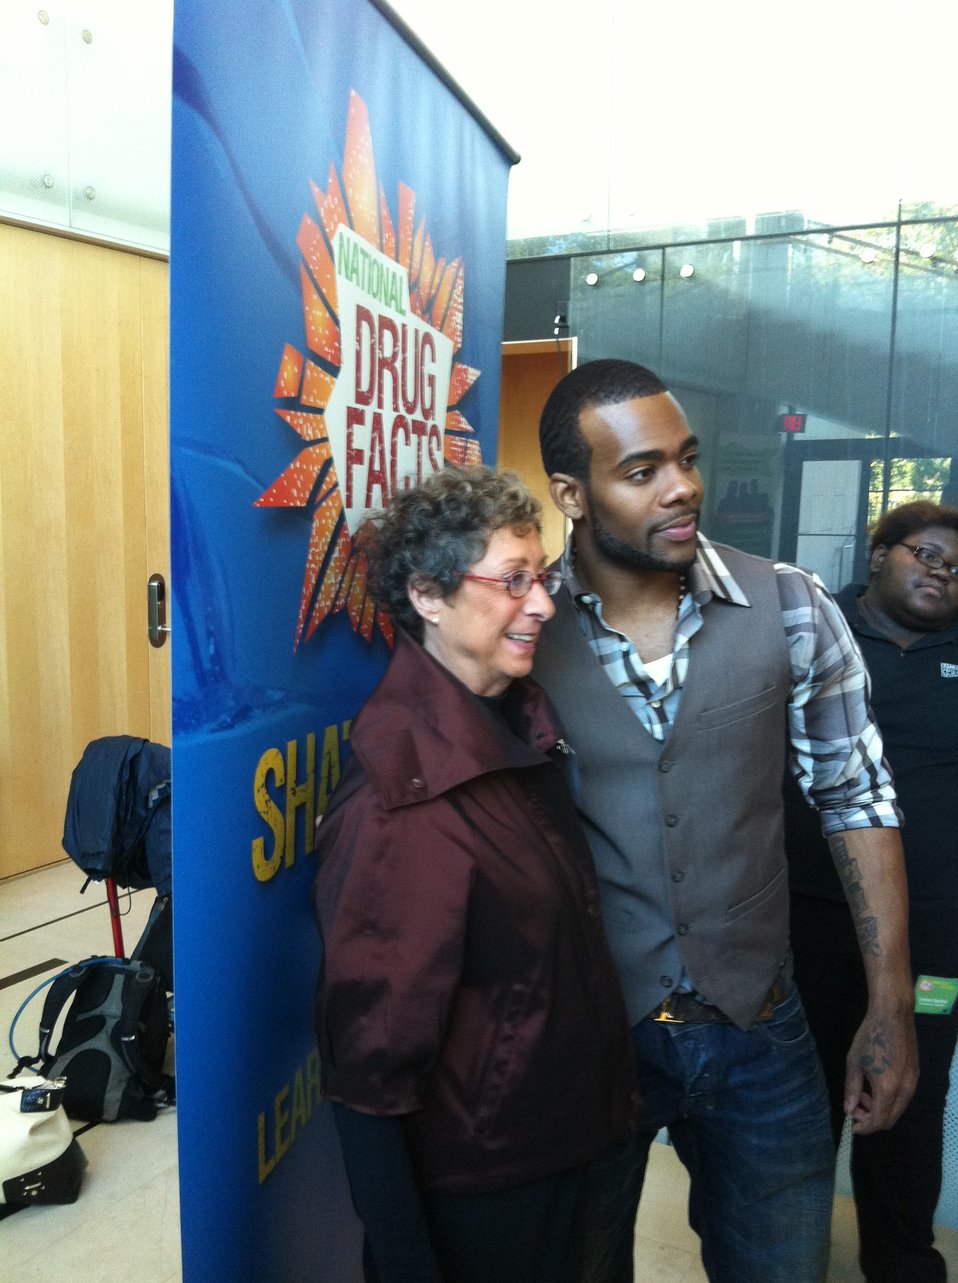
Mentor 23